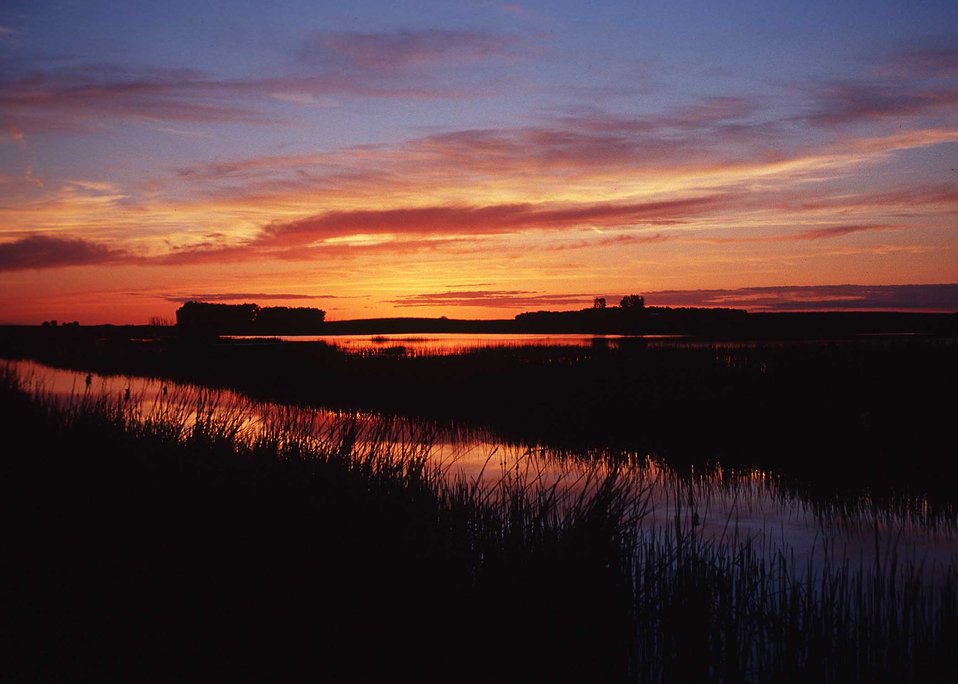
Sunset in South Dakota

Sunset in the prairie pothole region of South Dakota.